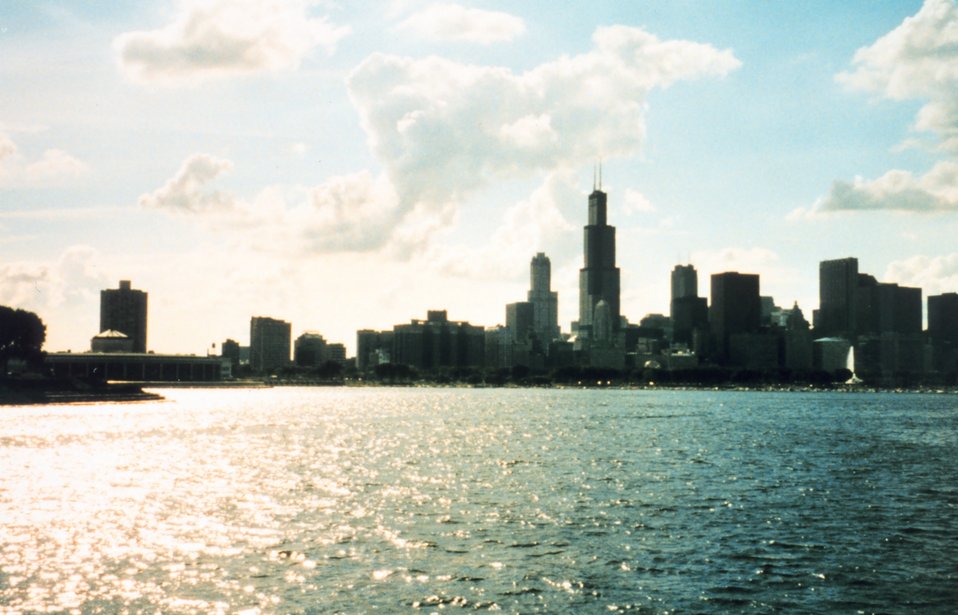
Lake Michigan waterfront